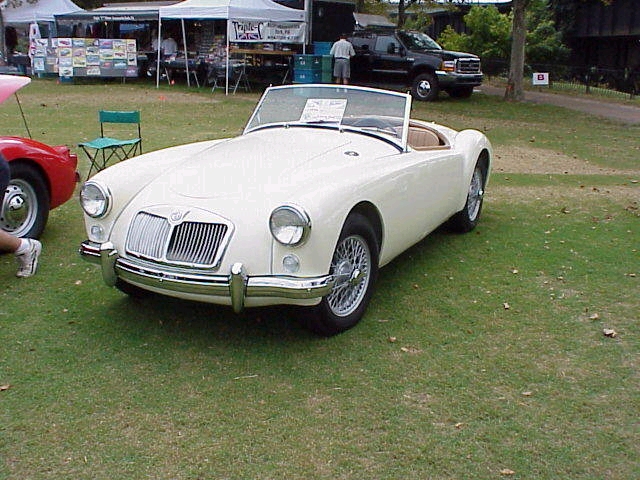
This picture was taken by myself of my 1960 MGA at out British car in Richmond VA, Sept 2000. It is released to public domain, and would be a nice addition to the other photos of MG's, which an MGA is notably absent.